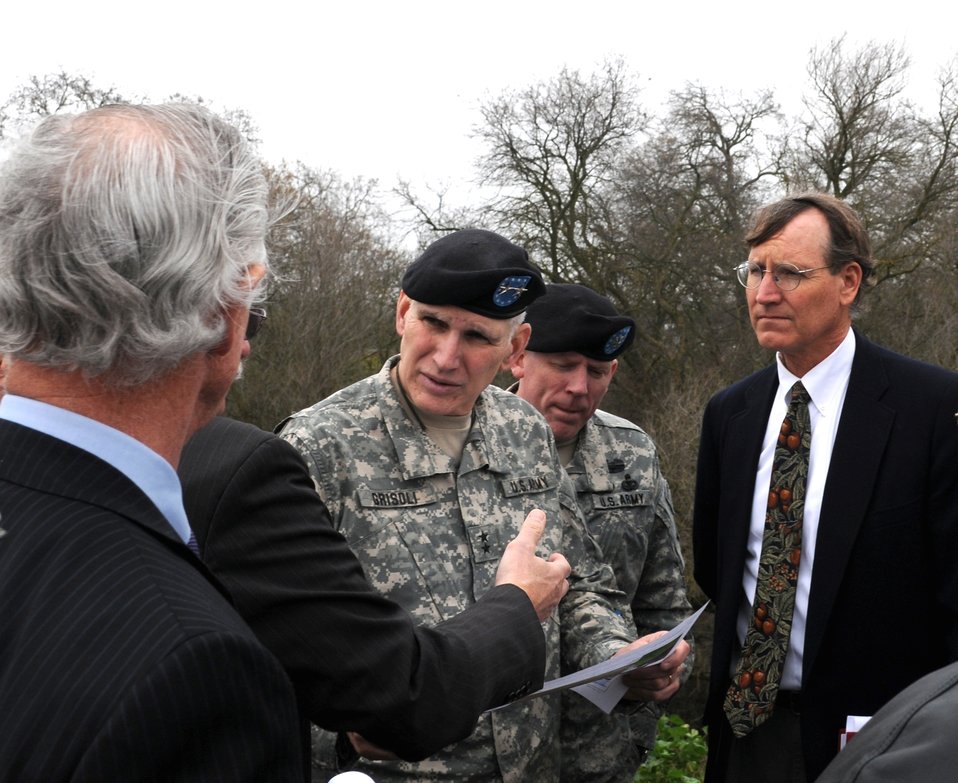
Maj. Gen. Grisoli tours Natomas levees

SACRAMENTO, Calif. (Jan. 21, 2011) – Maj. Gen. William T. Grisoli tours levees slated for improvement work in Natomas, Calif., with Central Valley Flood Protection Board president Ben Carter (right) and Sacramento District commander Lt. Col. Andy Kiger Jan. 19. Grisoli was visiting Sacramento to hear from partner agencies about the challenges in California of meeting the Corps’ guidelines for vegetation on levees. He serves as Deputy Commanding General for Civil and Emergency Operations for the U.S. Army Corps of Engineers. The Sacramento District is working with the Central Valley Flood Protection Board and the Sacramento Area Flood Control Agency to improve levees in the Sacramento area under the American River Common Features project.